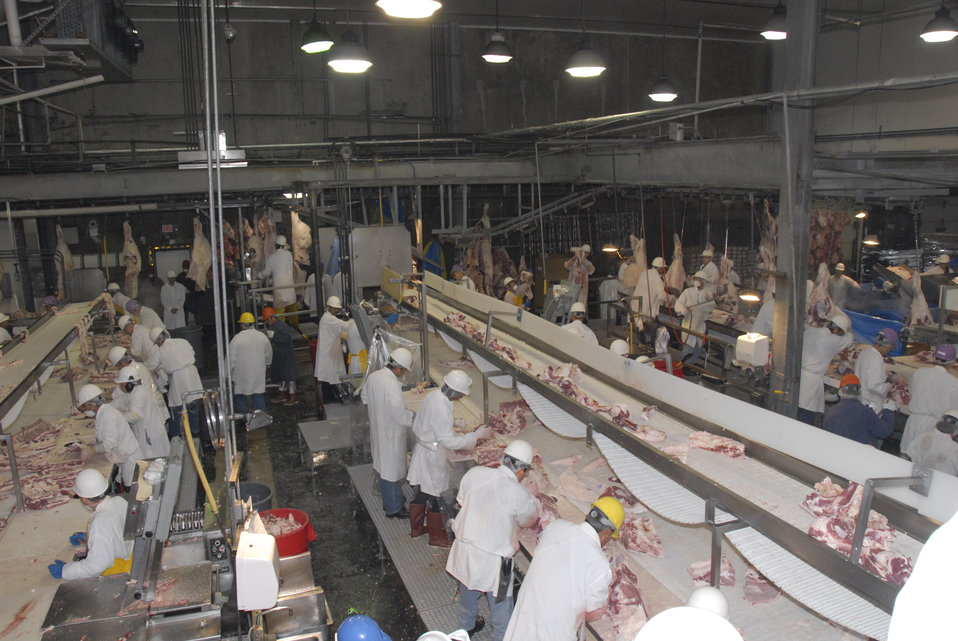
Workers at the Sam Kane beef slaughterhouse in Corpus Christi, Texas on June 10, 2008 dissect, sort and separate beef parts. U.S. Department of Agriculture (USDA) Food Safety and Inspection Service (FSIS) inspectors are on site to ensure the beef is processed in accordance with USDA FSIS regulations.